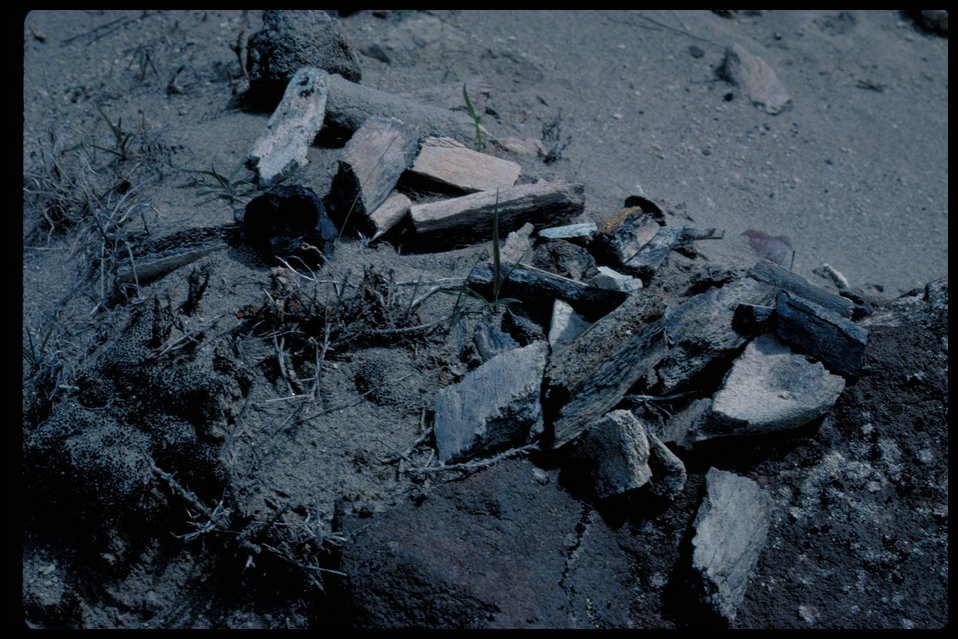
Oregon Trail north of Sinker Creek Lower Snake River District